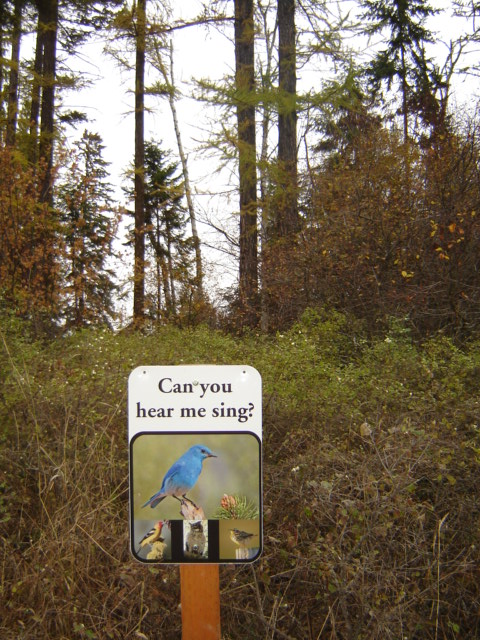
Nature Trail at Creston National Fish Hatchery

Creston National Fish Hatchery provides many educational opportunities for area schools and families. This is one of the 13 signs you will see as you walk the trail loop.